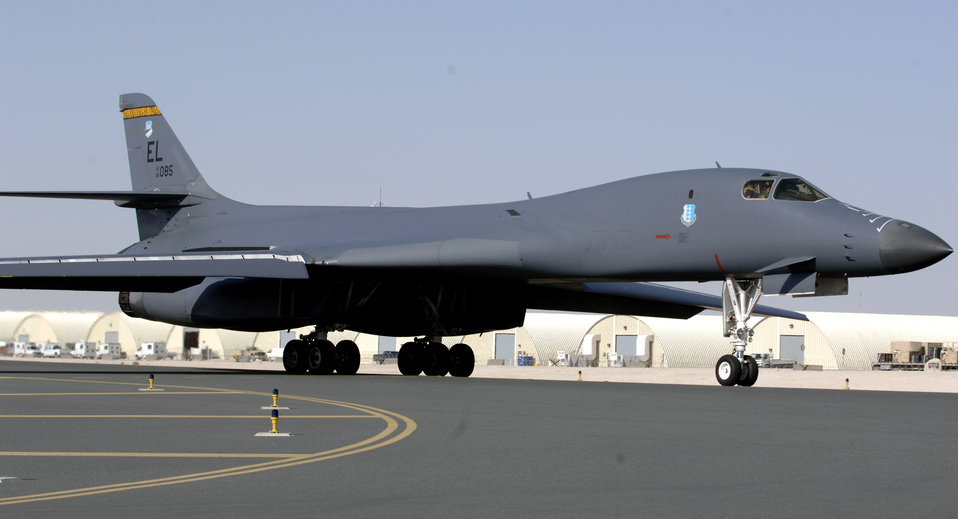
Airpower Summary for May 6

A B-1B Lancer prepares for take off from a base in Southwest Asia. B-1Bs and otherAir Force and coalition fighters performed 49 close-air-support missions in support of Operation Iraqi Freedom May 6.